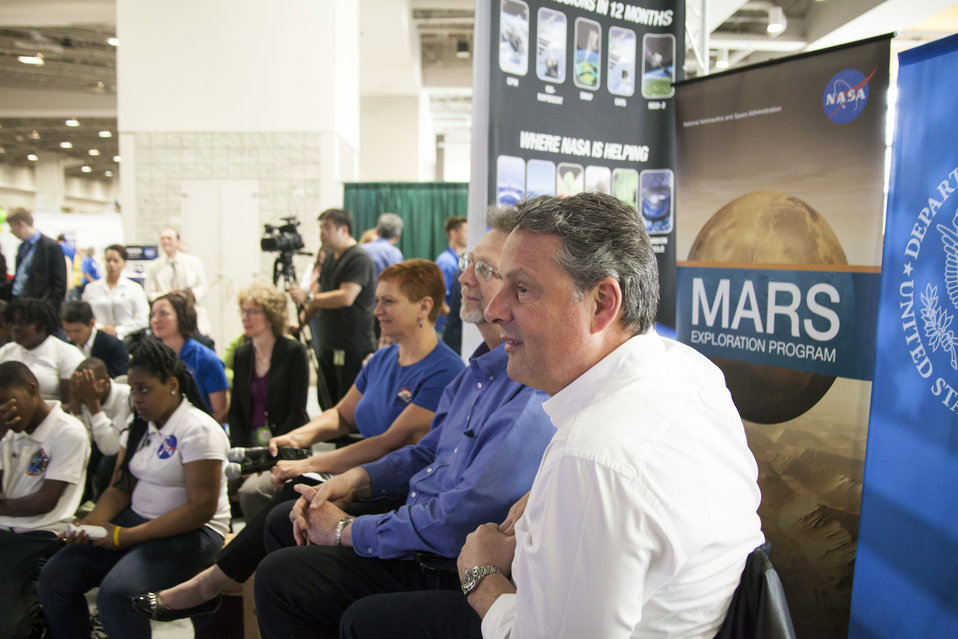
Middle School Students Participate in a Virtual Field Trip to Mars

Kramer Middle School students connect via Google Hangout to explore the Red Planet and hear from Mars subject matter experts, including Lisa May and Dr. Jim Green of NASA and John Feeley, Principal Deputy Assistant Secretary for Western Hemisphere Affairs, at the USA Science and Engineering Festival (USASEF) in celebration of National Science Week in Washington, D.C., on April 25, 2014.